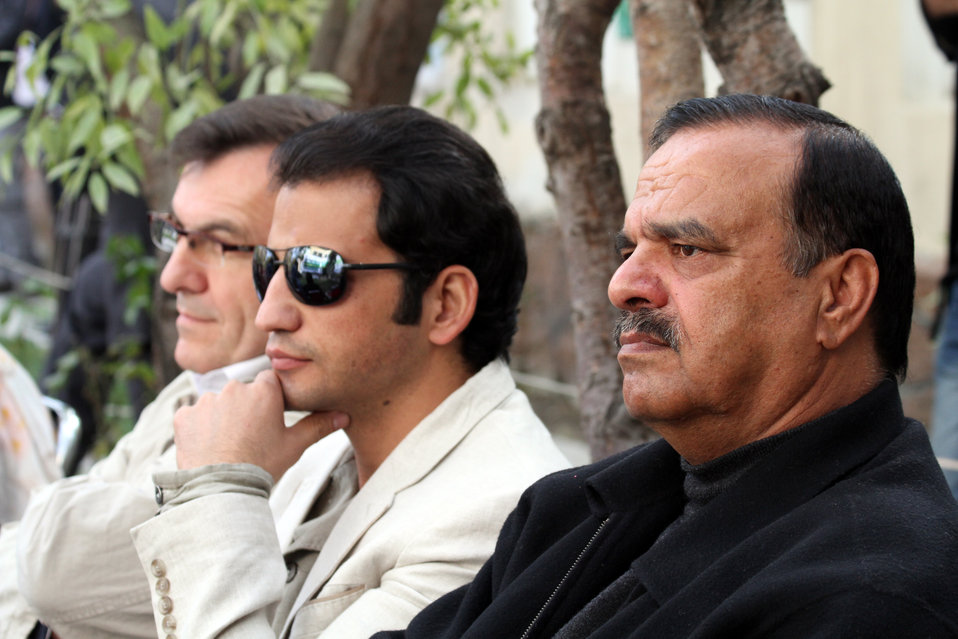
Afghan Youth Festival

Internews - USAID